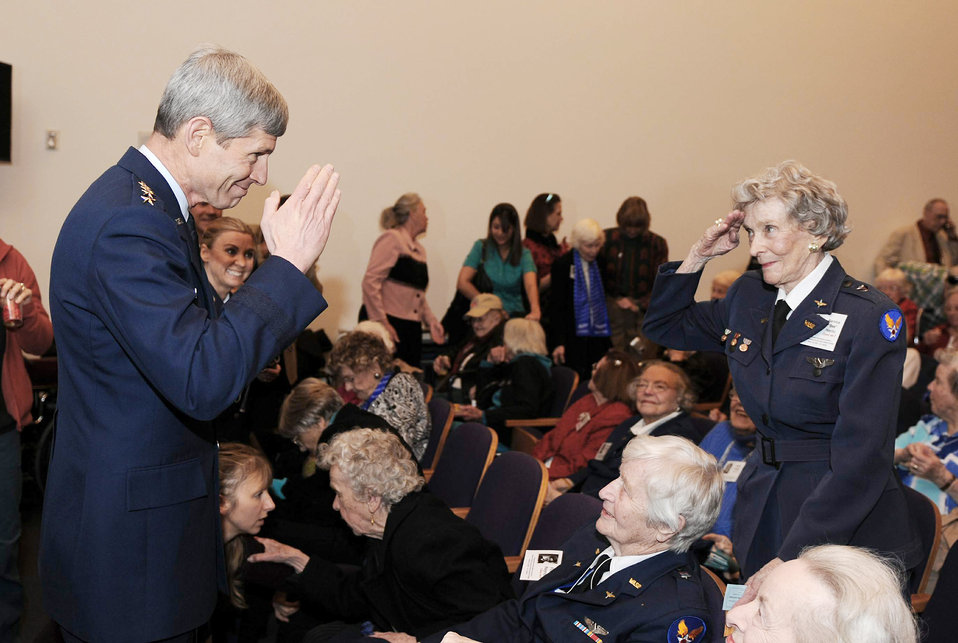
Back at you

Air Force Chief of Staff Gen. Norton Schwartz returns a salute from Women in Airforce Service Pilot Bernice